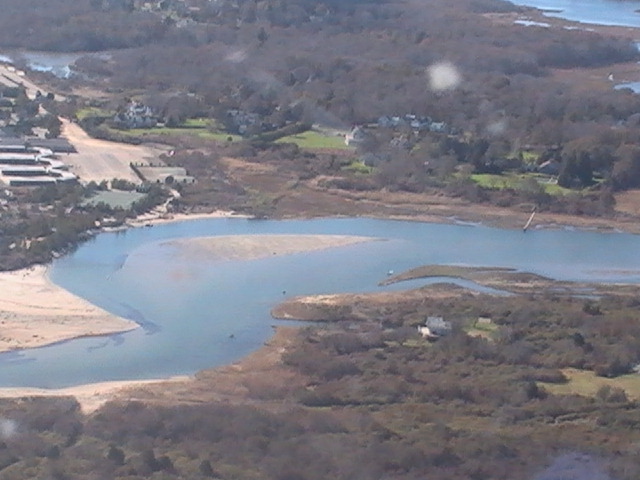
John H. Chaffee National Wildlife Refuge (RI)

A shift in the channel of the Lower Narrow River, John H. Chafee National Wildlife Refuge, Rhode Island.